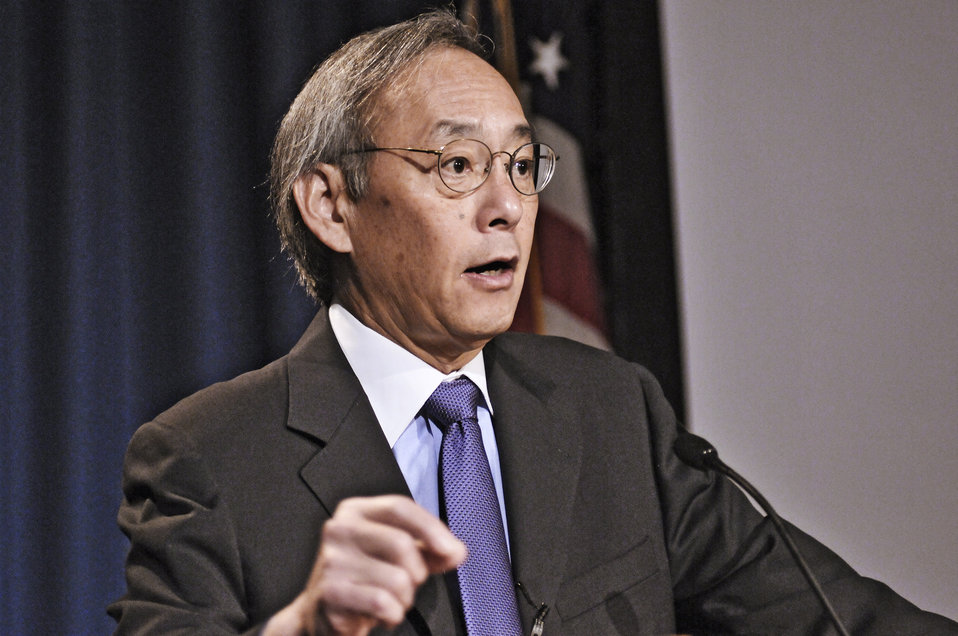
Energy Secretary Steven Chu gives remarks at the unveiling of the Quadrennial Technology Review.